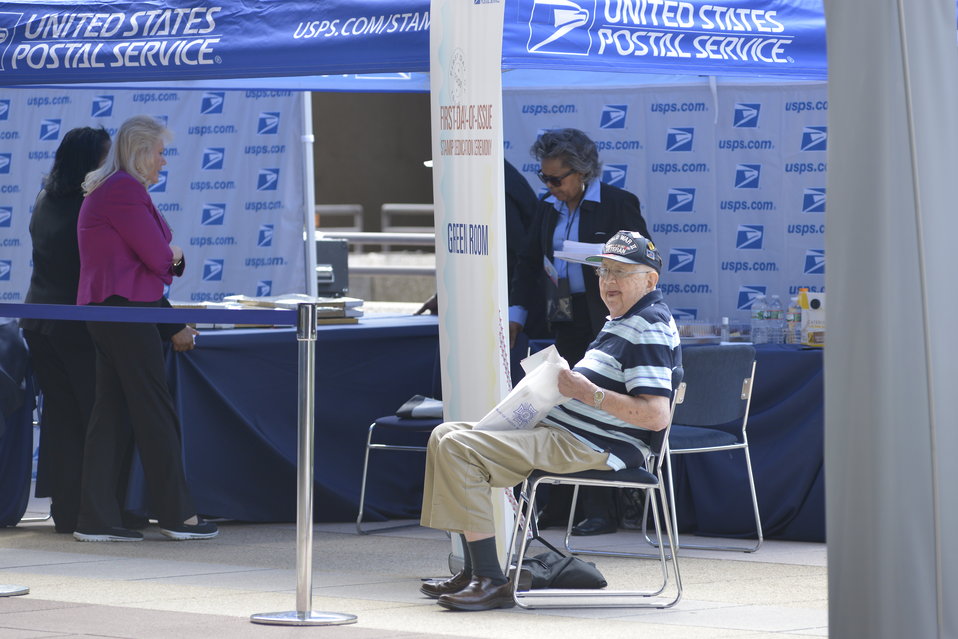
U.S Postal Services introduces a new Global: Sea Surface temperatures forever stamp at the Earth Day program at Department of Energy on April 22, 2014.